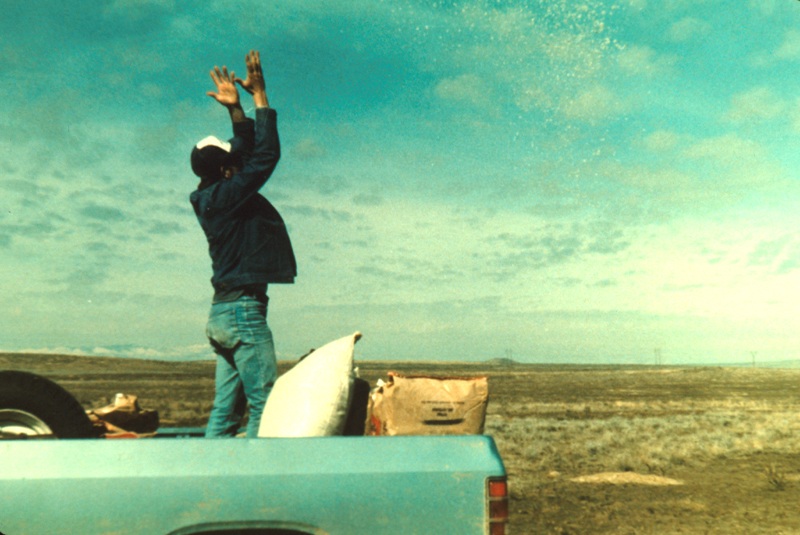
Seeding Range Restoration Project Lower Snake River District